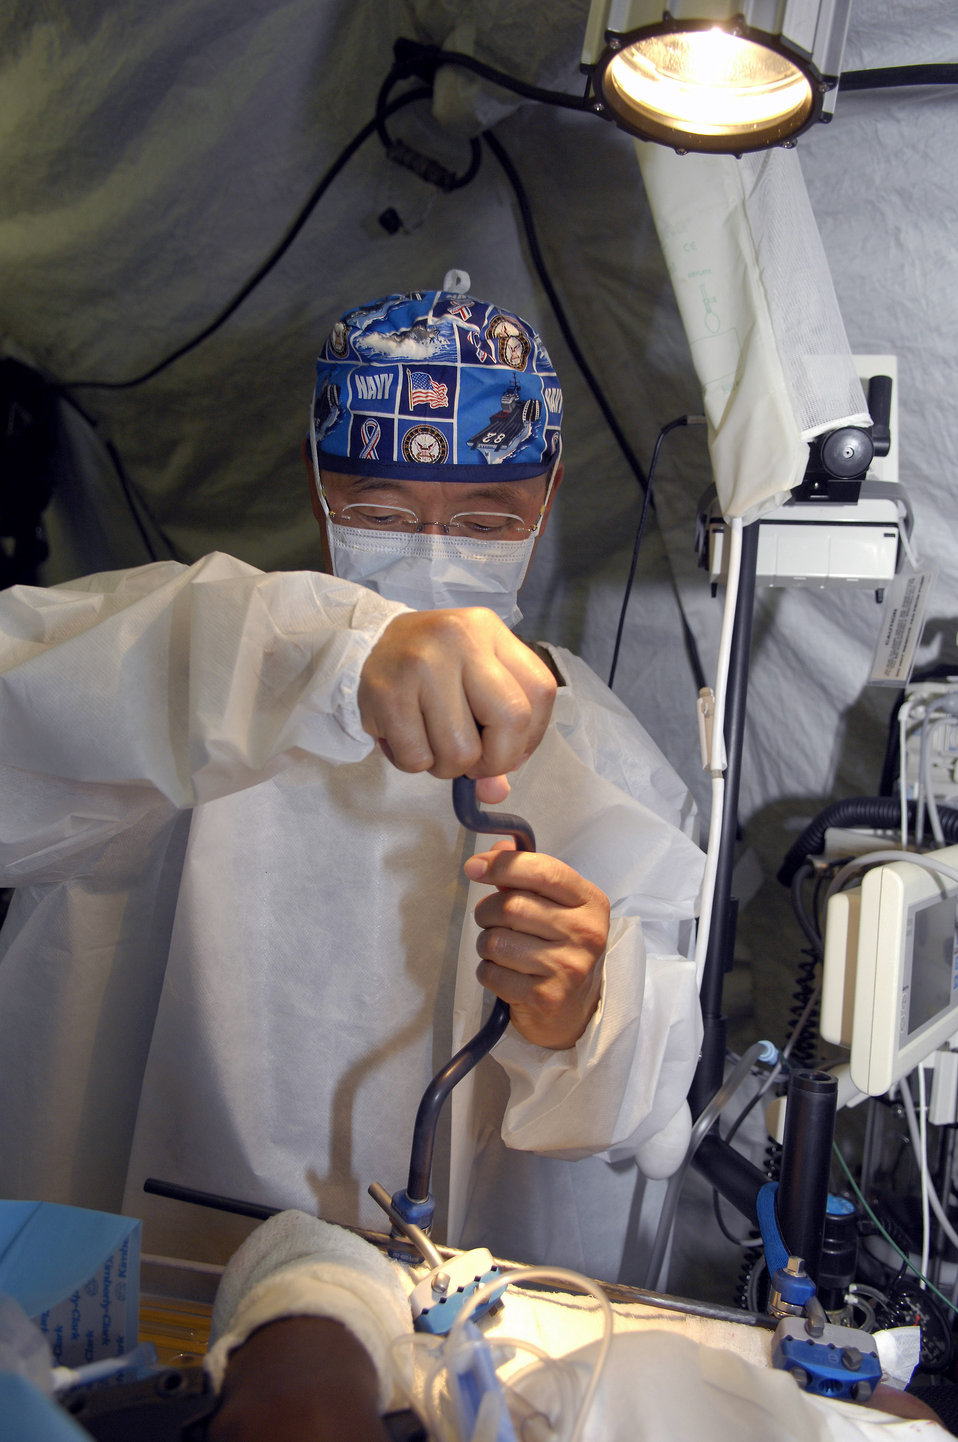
American and African medical personnel train together

U.S. Navy Capt. William Oh simulates an operation on a Malian patient July 18 during a mass casualty exercise at Bamako, Mali. More than 90 servicemembers deployed to MEDFLAG 08, a multi-national medical training exercise designed to enhance medical capabilities and readiness for U.S. and African forces. Captain Oh is deployed from Naval Operational Support Unit, Toledo, Ohio.